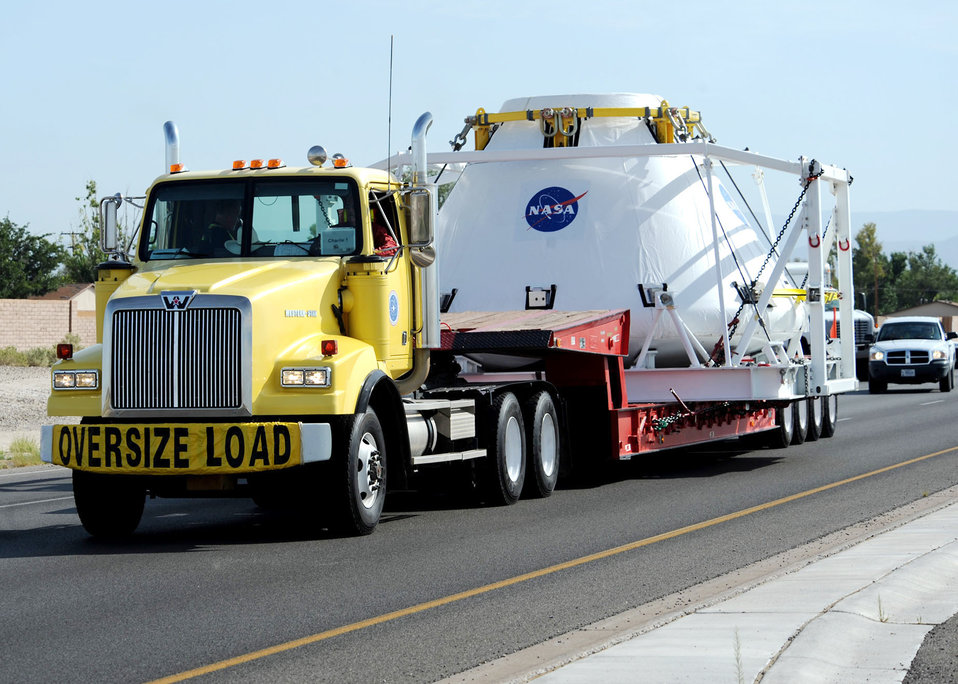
Next-gen spacecraft stops at Holloman

NASA's next generation of manned spacecraft leaves Holloman Air Force Base, N.M. Aug. 21 enroute to White Sands Missile Range, N.M. The module was escorted on base by 49th Security Forces Squadron Airmen and off base by officers from the New Mexico State Police and the New Mexico Department of Public Safety Motor Transportation Division along with deputies from the Otero County Sheriff's Department.